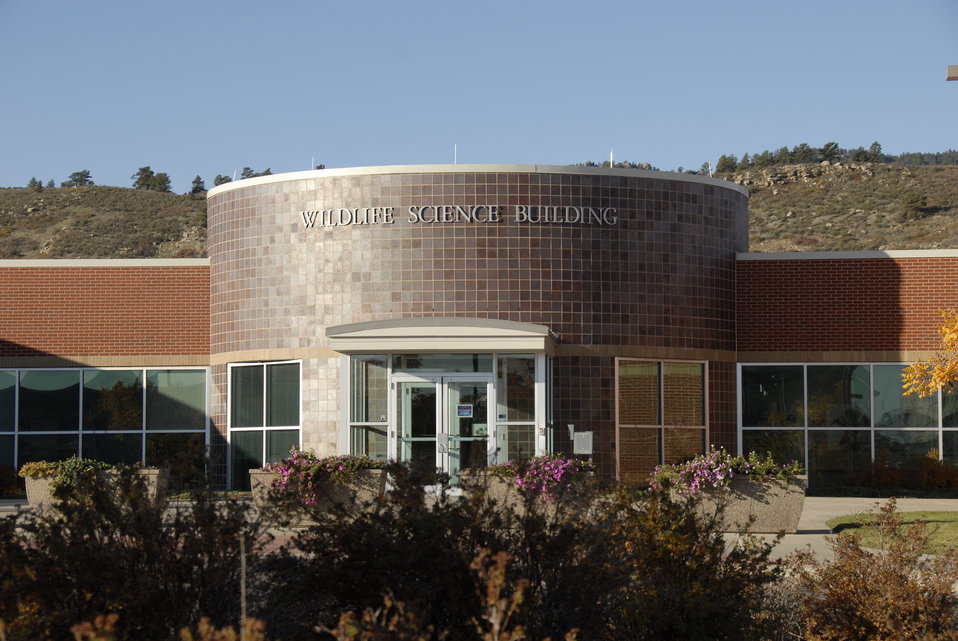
U.S. Department of Agriculture (USDA) Animal and Plant Health Inspection Service (APHIS) Wildlife Science building is located in Fort Collins, Colorado on October 23, 2008.